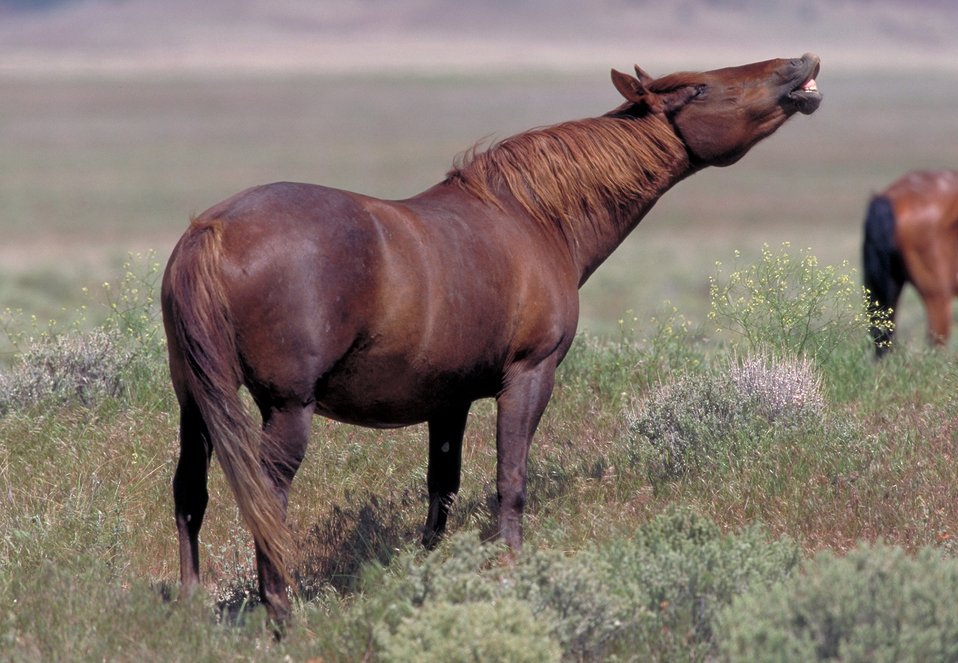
Onaqui Herd near Dugway, Utah.